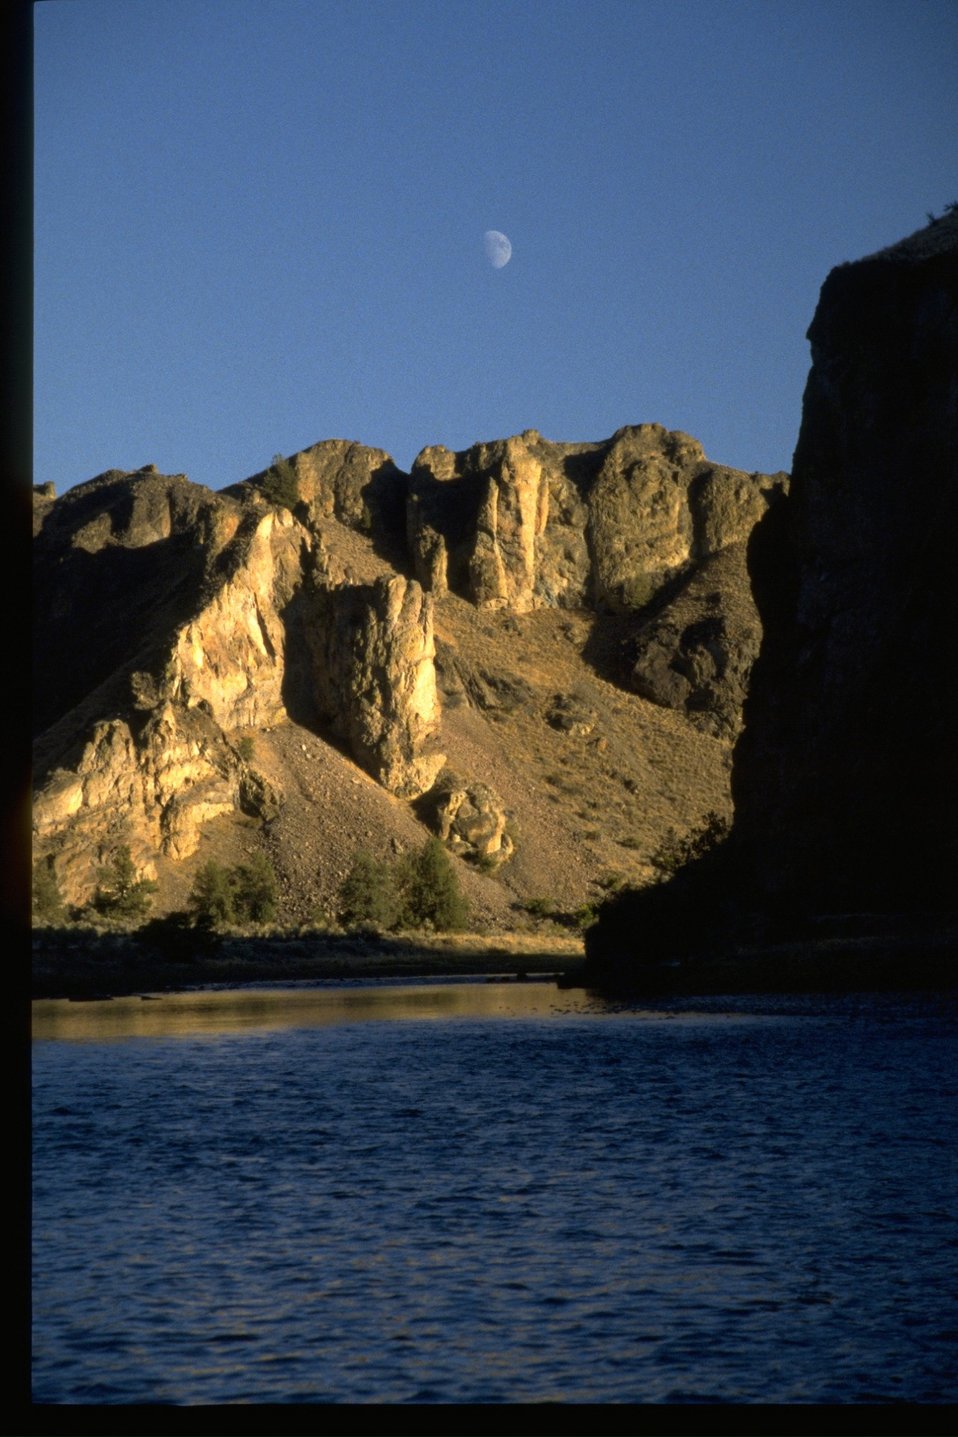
Silhoutted rocks and sun lit rocks above the John Day River.